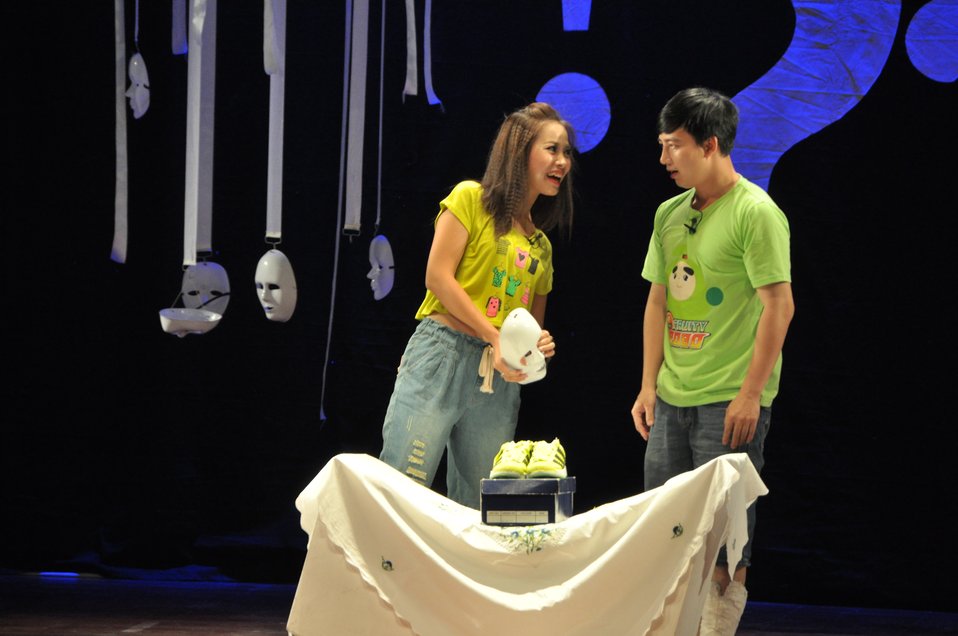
PEPFAR Musical Questions and Exclamations

Hanoi, May 17, 2013